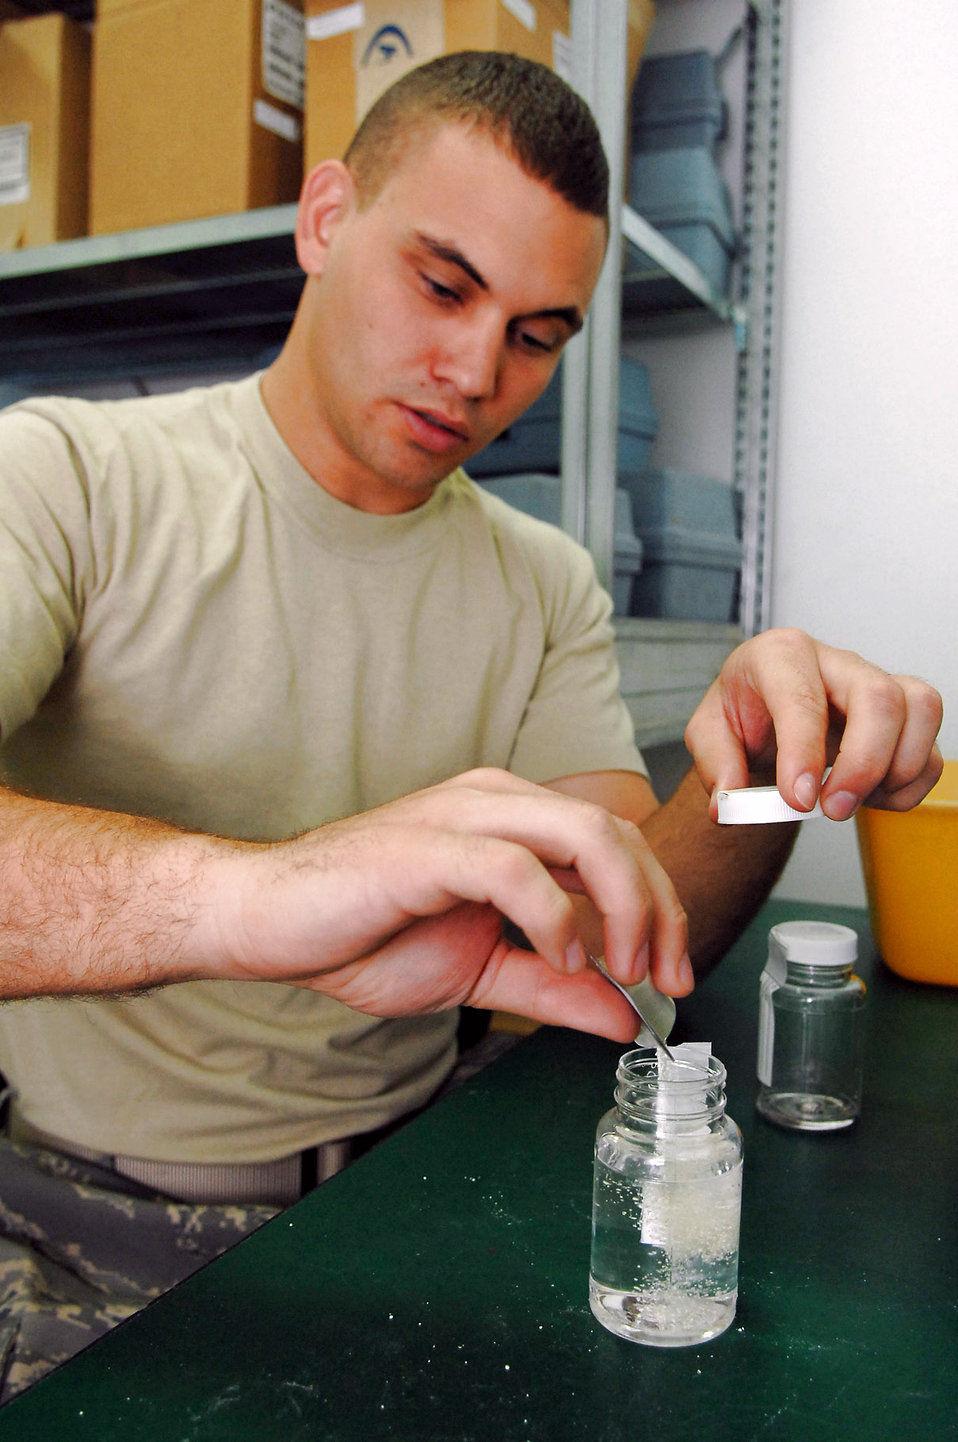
Team effort keeps Balad water supply safe

Staff Sgt. Gary Messer pours bacteria culture food into a sample of water taken from the Air Force Theater Hospital before placing it in an incubator for 24 hours March 13 at Balad Air Base, Iraq. The culture food will drive any bacteria that may be in the water to grow at a rapid rate. This water; however, was free of any bacteria so no reaction or growth occurred. Sergeant Messer, a 332nd Expeditionary Aerospace Medical Squadron bioenvironmental engineer, is deployed from Lackland Air Force Base, Texas.